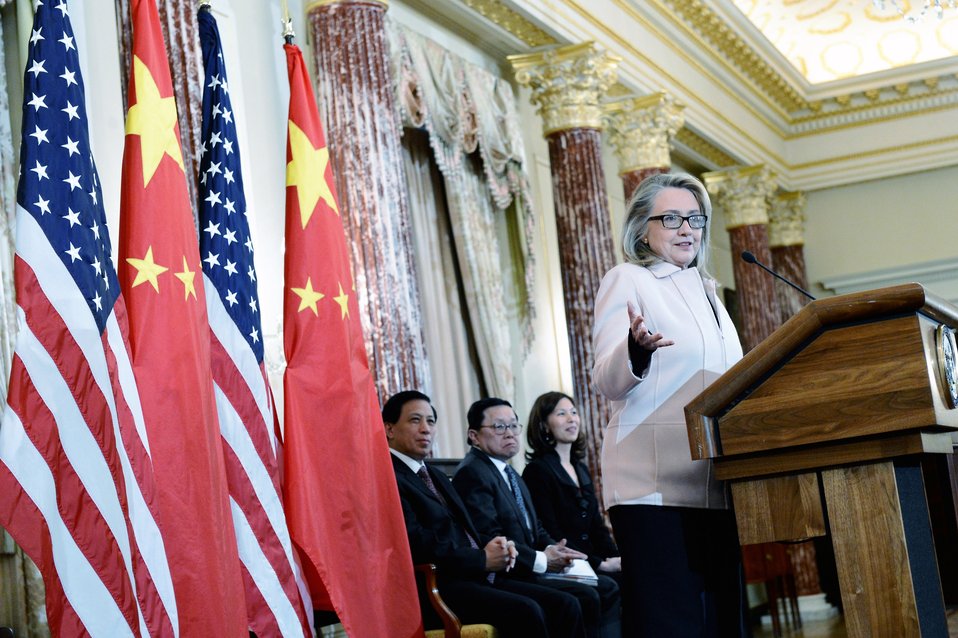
Secretary Clinton Delivers Remarks at the Launch of the 100,000 Strong Foundation

U.S. Secretary of State Hillary Rodham Clinton delivers remarks at the launch of the 100,000 Strong Foundation, at the U.S. Department of State in Washington, D.C., January 24, 2013.